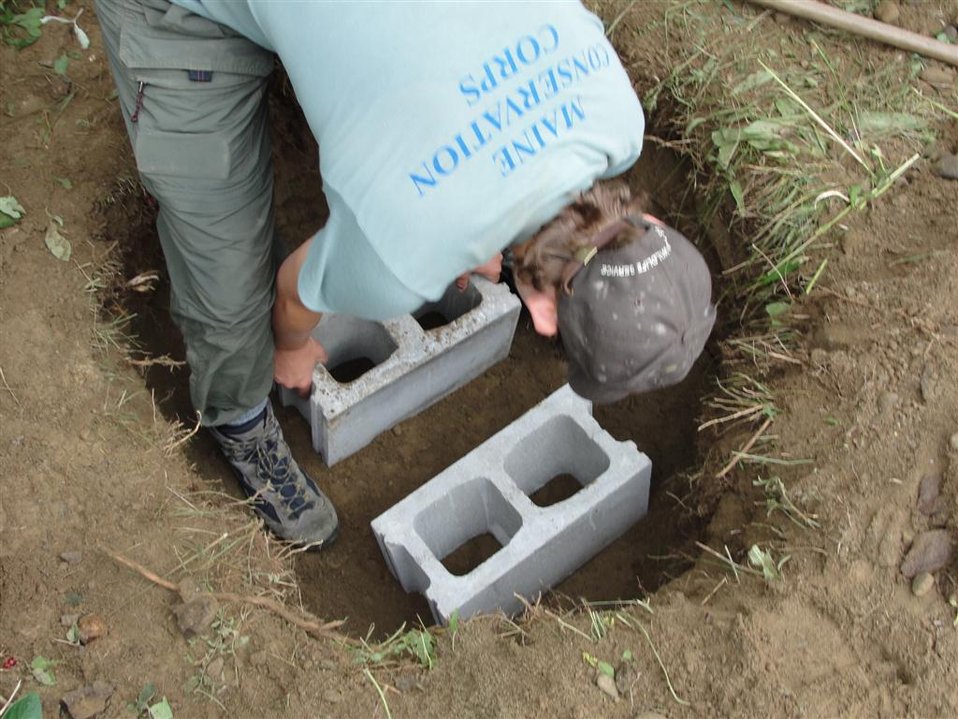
Restoring homes for New England cottontails

Constructing burrows for New England cottontails to use at Libby Field in Maine.